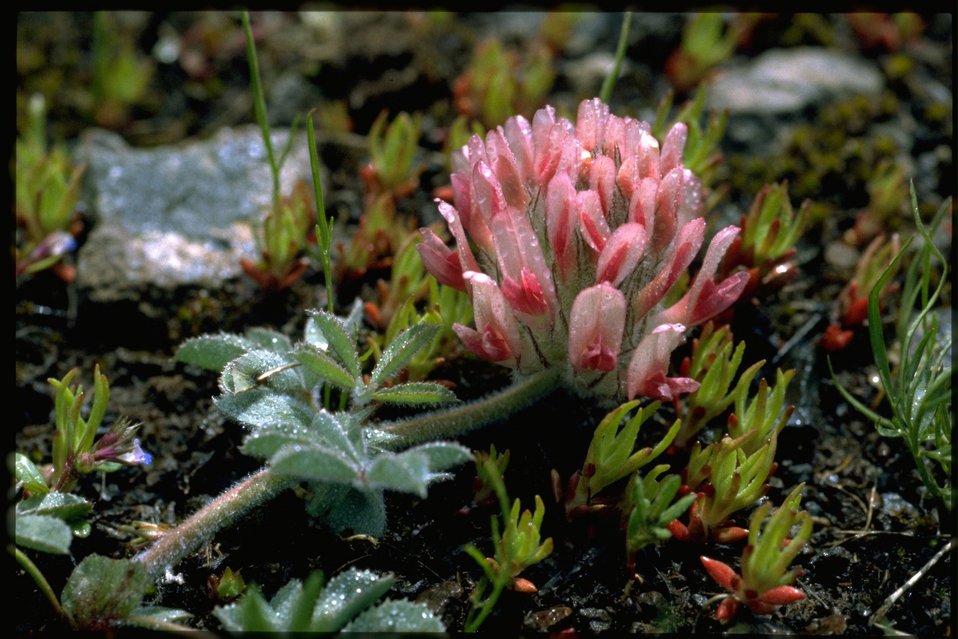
Closeup shot of Big-headed clover, Trifolium macrocephalum.